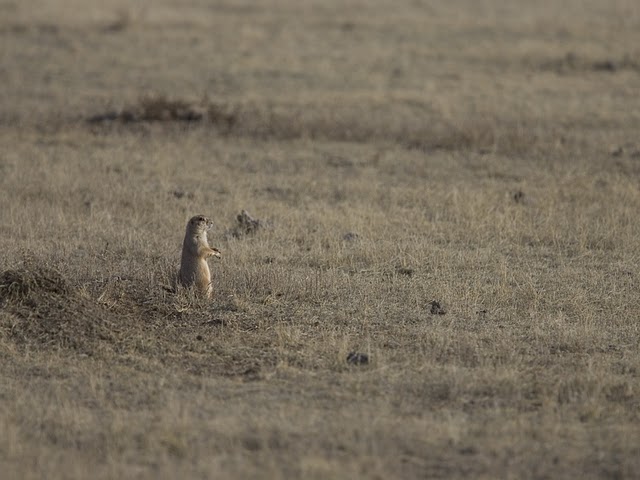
Prairie dog at the National Black-footed Ferret Conservation Center. Black-footed ferrets depend on prairie dogs for food and their burrows for shelter.